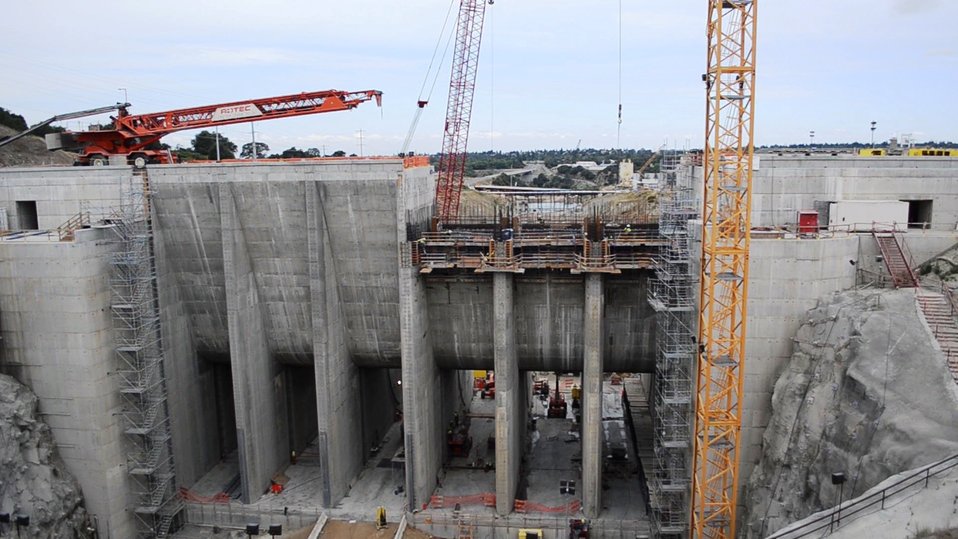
Hiram W. Johnson High School students visit Folsom Dam auxiliary spillway

A view of the Folsom Dam auxiliary spillway project in Folsom, Calif., shown May 20, 2014. The project is scheduled to be completed by October 2017 and is the centerpiece of a broader multi-agency effort to modernize Sacramento's flood control infrastructure and reduce flood risk for the region.